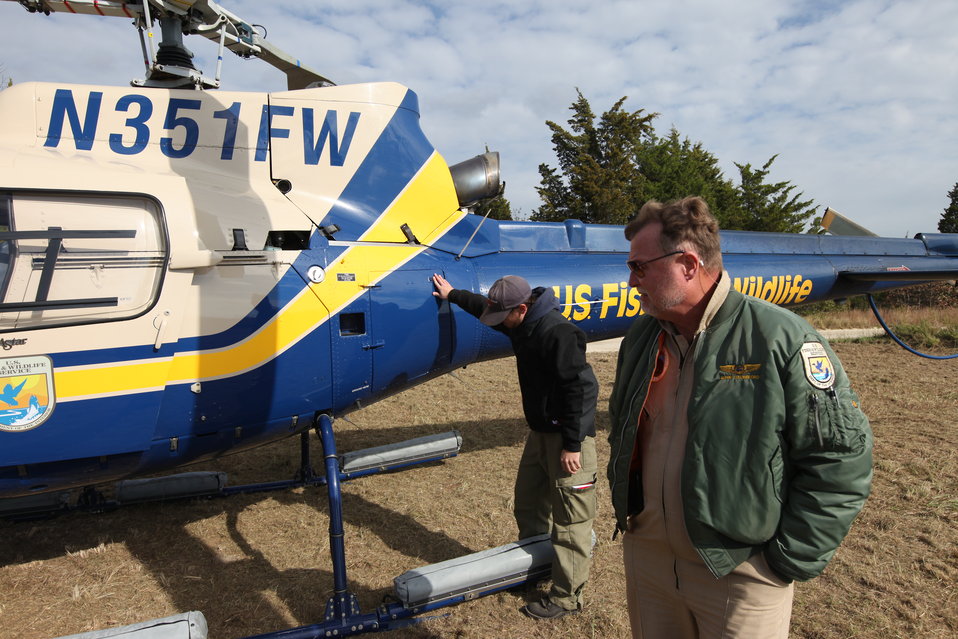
U.S. Fish and Wildlife Service pilots do pre-flight check (NJ)

U.S. Fish & Wildlife Service helicopter pilot Glenn Cullingford and helicopter manager Kyle Krzywicki inspect the aircraft before taking flight for an aerial survey of damage at Edwin. B. Forsythe National Wildlife Refuge in New Jersey.